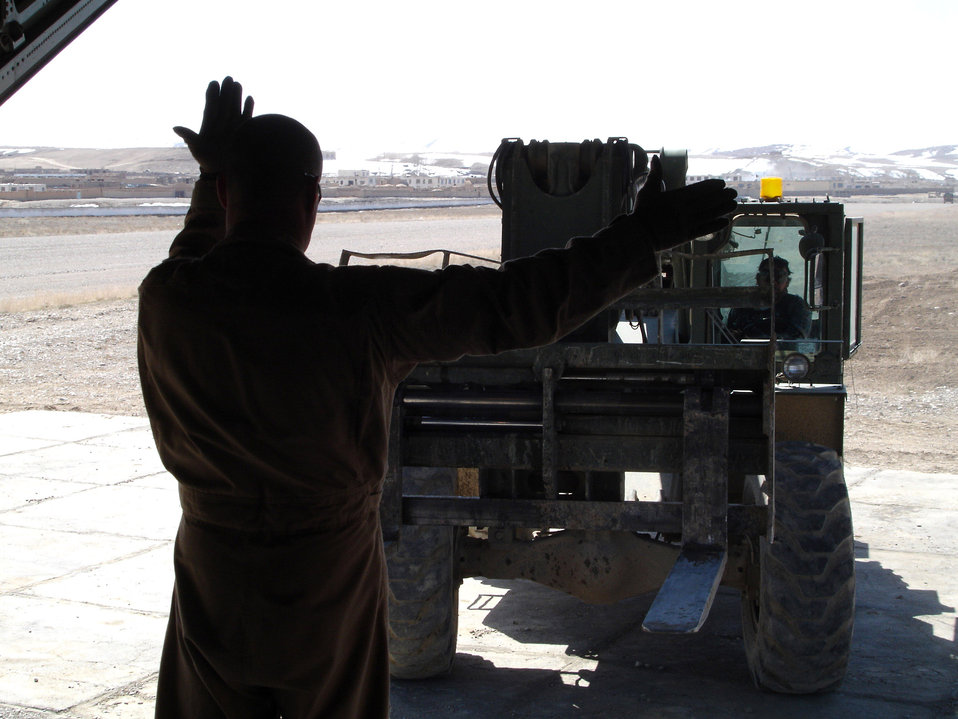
C-130 airdrops provide critical supplies to U.S. forces

Supplies are loaded onto a C-130 Hercules at Bagram Air Base, Afghanistan, March 27, that later will be airdropped to U.S. ground forces supporting Operation Enduring Freedom.